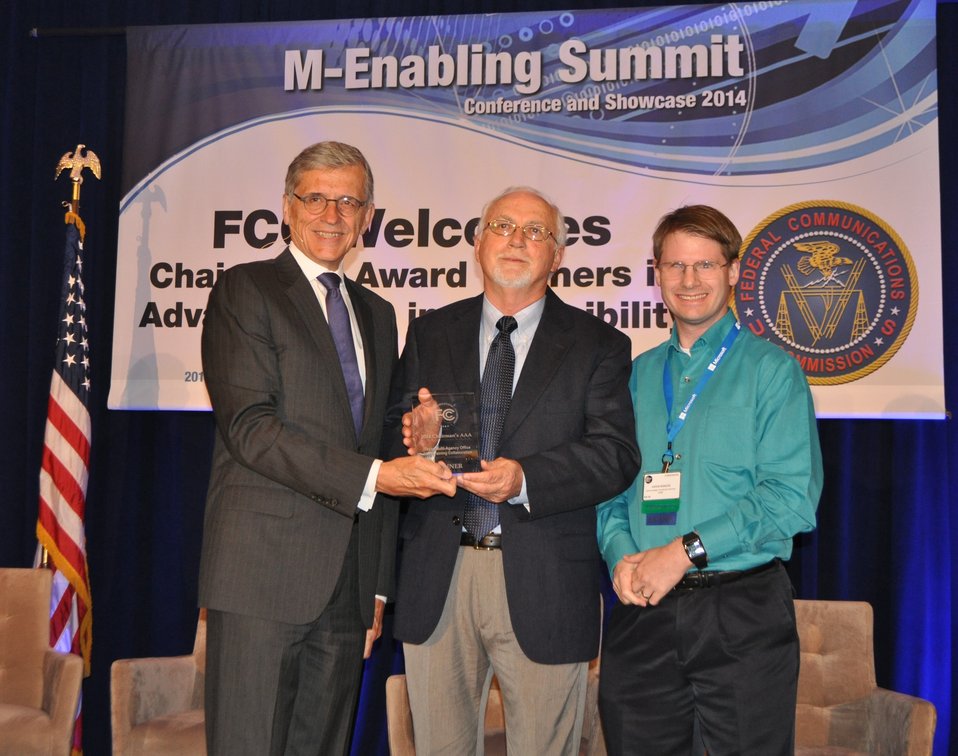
6.9.2014 Third Annual Chairman’s Awards for Advancement in Accessibility

Winner for the category of Employment Opportunities: 'Creating Accessible Microsoft Office 2010 Documents,': Buddy Allison and Dr. Aaron Bangor accepting this award.